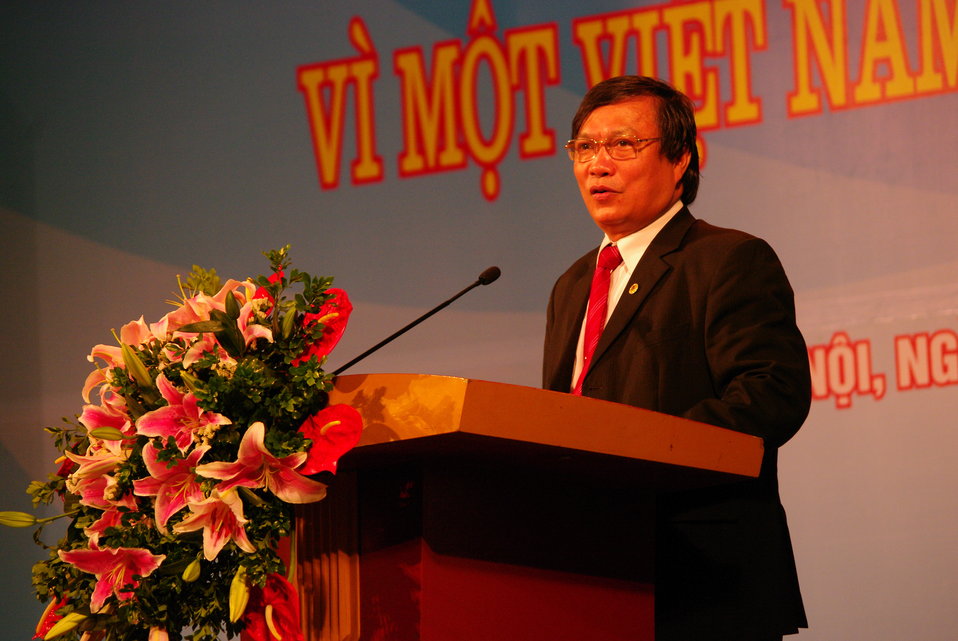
USAID Joins Government and Youth Union at World TB Day Event in Hanoi

March 23, 2013